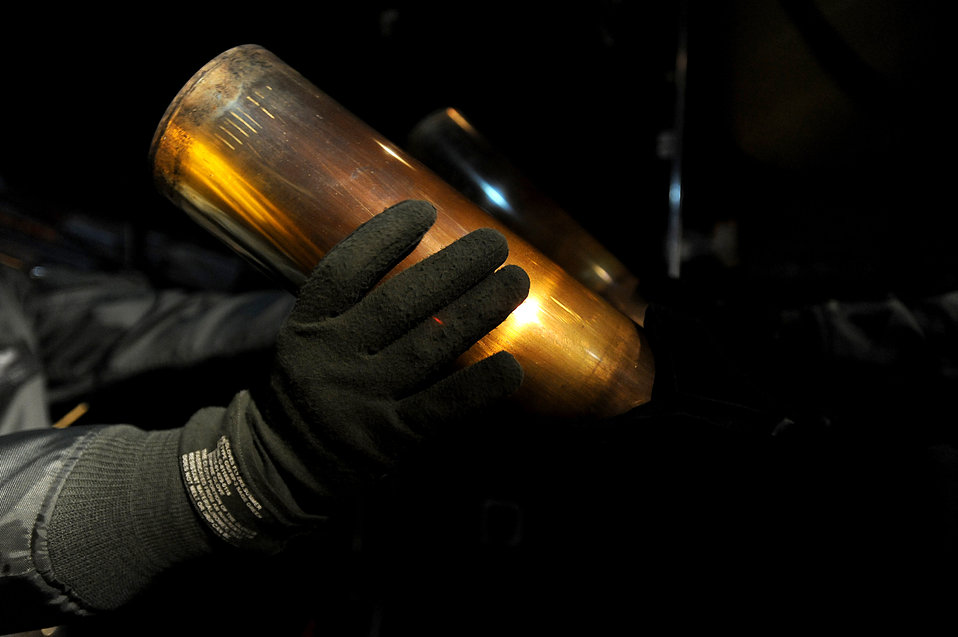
'Spooky' training

A 4th Special Operations Squadron Airman holds a spent 105mm round that has been fired from an AC-130U Spooky during a training mission Feb. 3, 2011, at Hurlburt Field, Fla.